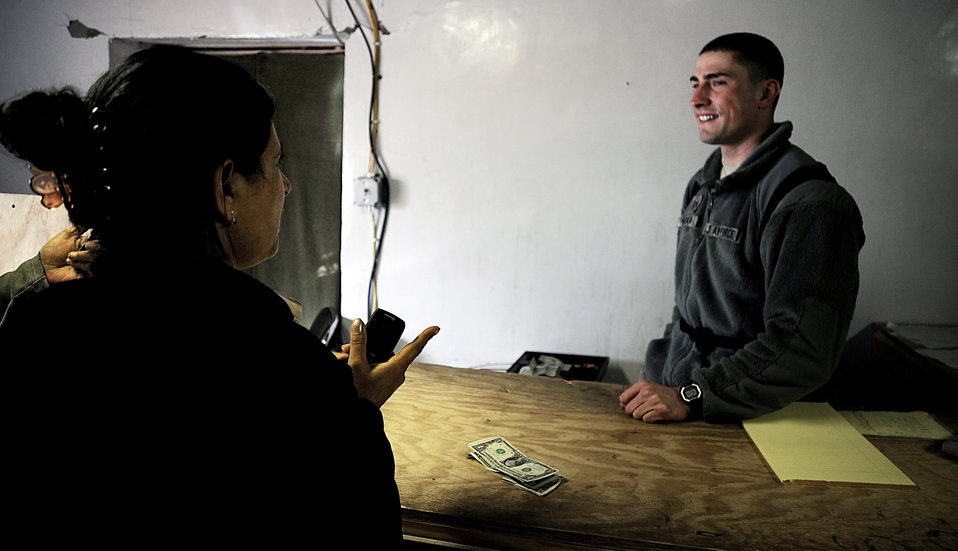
NCO brings calm over camp

Staff Sgt. Eric Began, a member of the Paktya Provincial Reconstruction Team, chats with customers at the base supply store April 12 at Forward Operating Base Gardez, Afghanistan.